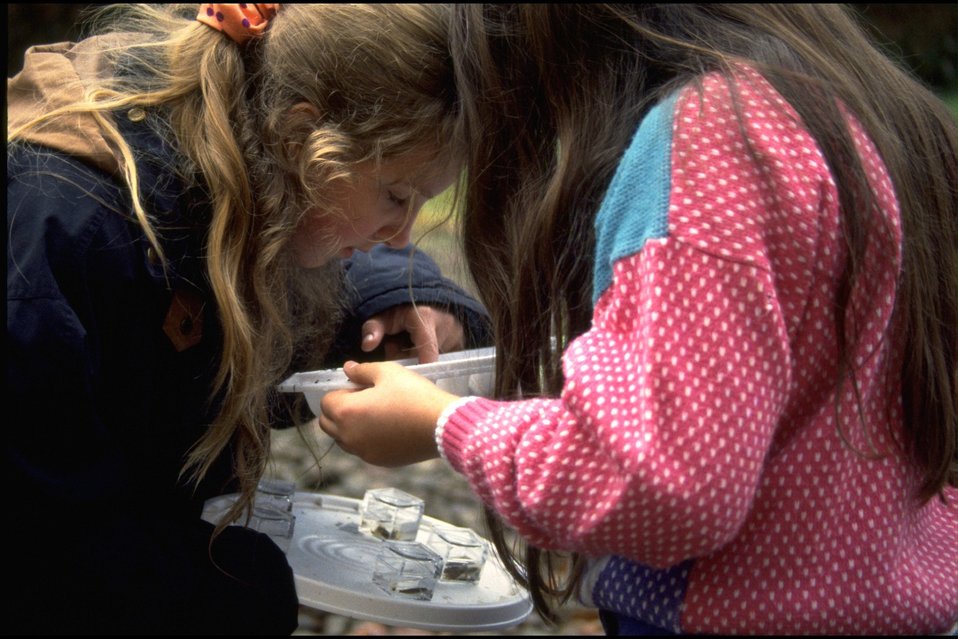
Salmon Watch Program (Whittaker Creek) - Meadow View School.